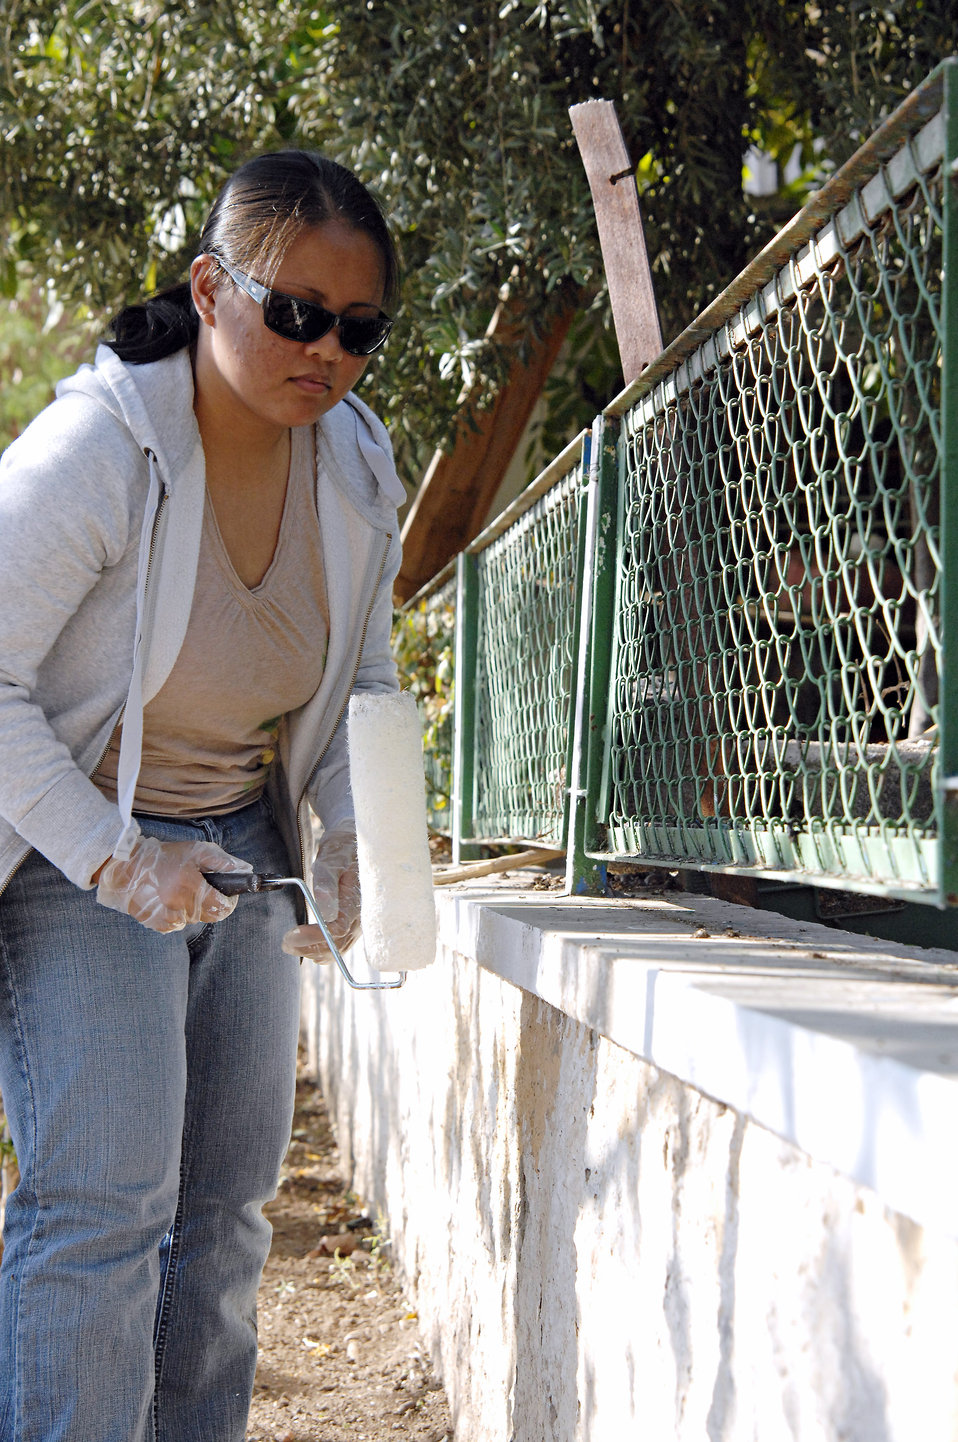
Incirlik volunteers strengthen community

Senior Airman Jessica Rodulfo adds a new coat of white paint to a concrete wall in one of Incirlik Village's parks Nov. 15 at Incirlik Air Base, Turkey. Airman Rodulfo was among the estimated 75 volunteers present who helped the Incirlik Air Base Chapel staff renovate the park. Airman Rodulfo is assigned to the 39th Logistics Readiness Squadron.